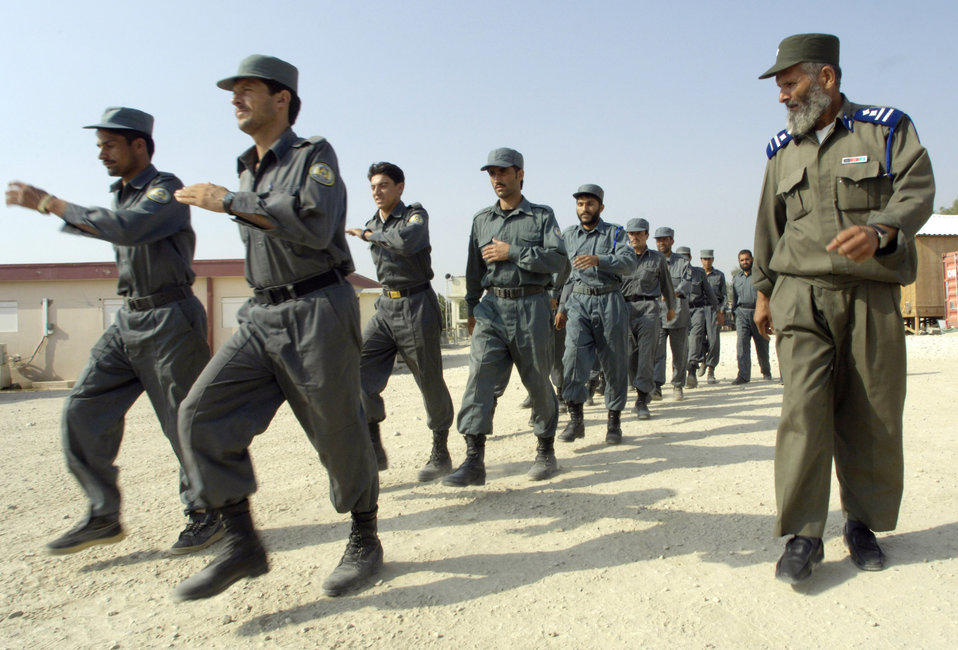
Afghans train Afghans with American mentorship

Afghan National Police Capt. Muhammad Ishaq calls out cadence for Afghan National Auxiliary Police trainees during drill practice Sept. 3. The trainees are attending a two-week ANAP sustainment course being held on forward operating base Mehtar Lam in Afghanistan's Laghman province. Afghan National police instructors are teaching the course on their own for the first time. Previously, all ANP instruction was conducted by a police technical advisory team made up of U.S. Air Force security forces Airmen assigned to the Laghman Provincial Reconstruction Team. The PTAT's role has now shifted to monitoring the course's progress and mentoring the ANP instructors.